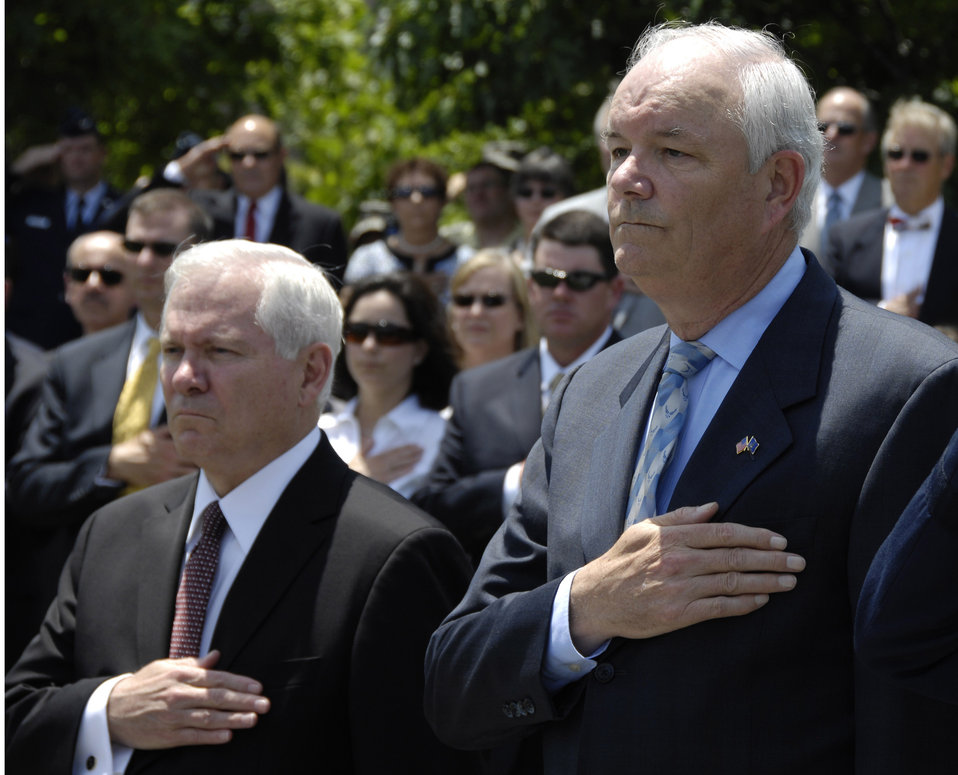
SECAF salutes Airmen during ceremony

The official party pays honors during the National Anthem during a farewell ceremony in honor of Michael W. Wynne, Secretary of the Air Force at the U.S. Air Force Memorial, Arlington, Va., June 20. From left to right are Defense Secretary Robert M. Gates and Air Force Secretary Wynne. Secretary Wynne is the Air Force's 21st secretary.